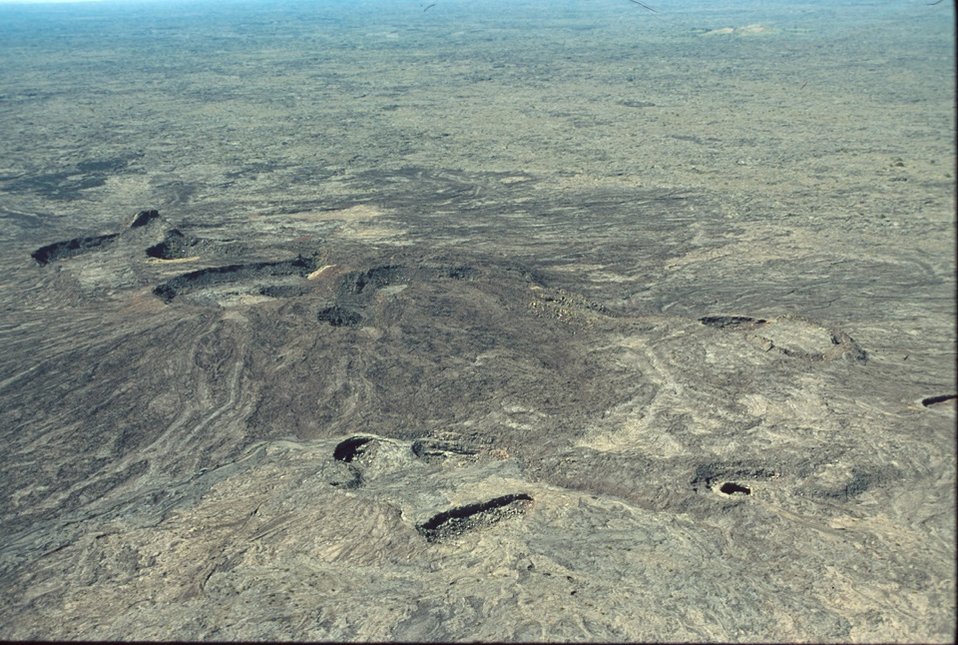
Shoshone Field Office USRD Upper Snake River District